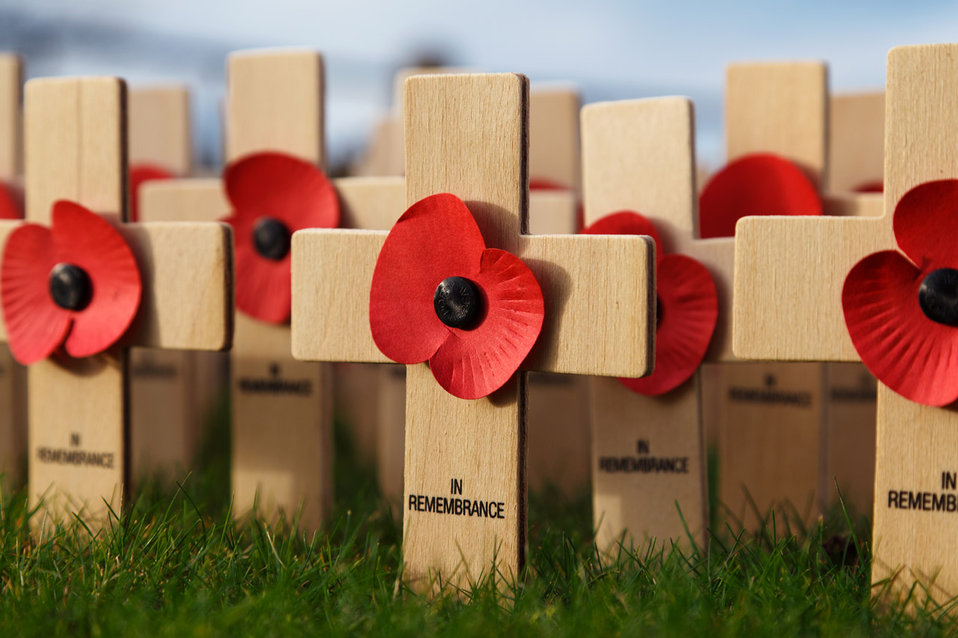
In remembrance

Small crosses with red poppy flowers.